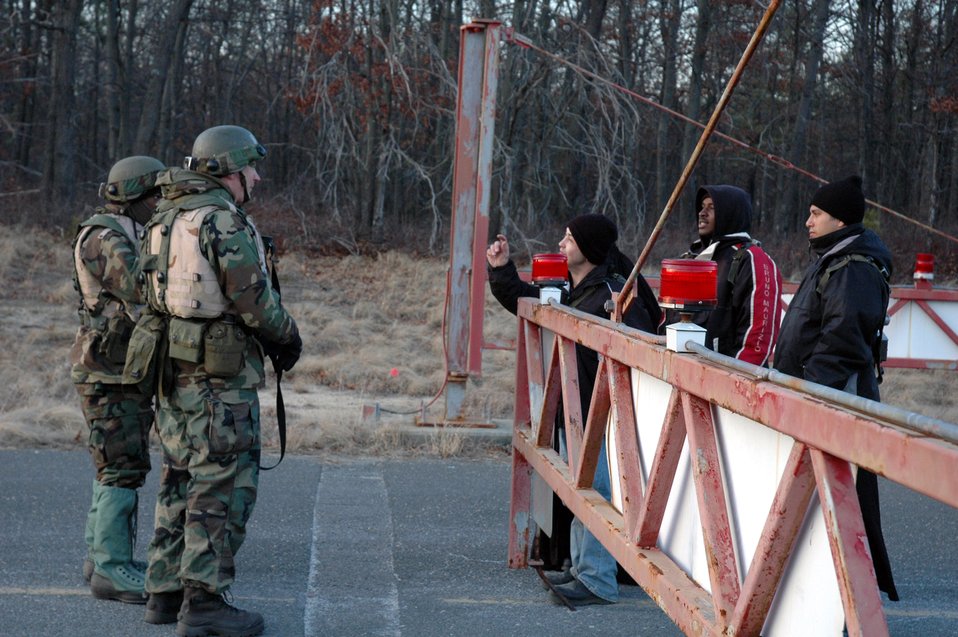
Eagle Flag

Airmen deployed with the 421st Air Expeditionary Group talk with